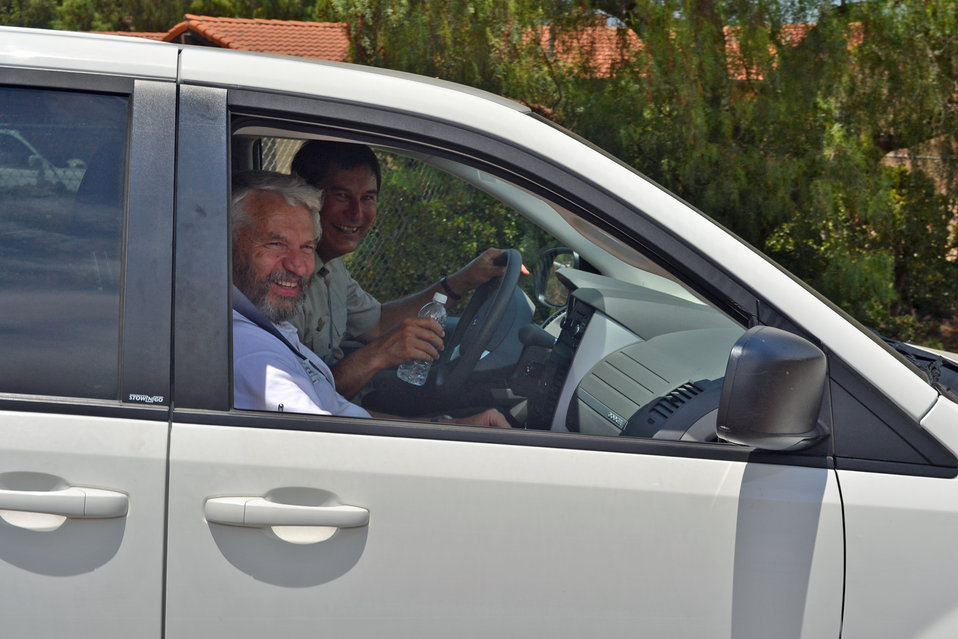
Hidden Valley Ribbon Cutting

Project Leader for the San Diego NWR Complex gives Assistant Director of the USFWS a tour of the refuge atop Miguel Mountain. (USFWS)